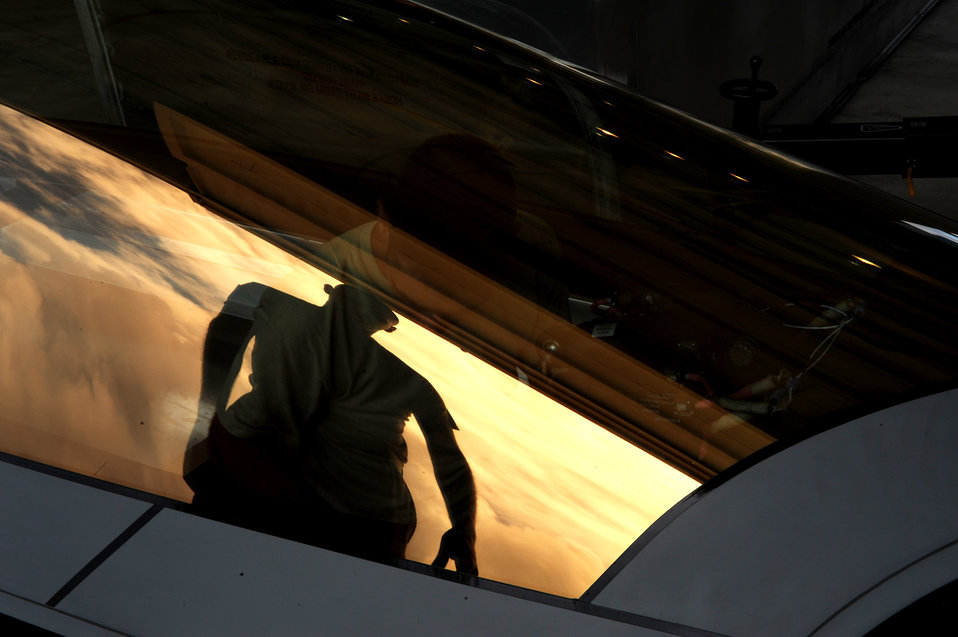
Egress technicians keep raptor pilots covered

Senior Airman Ryan Ott looks over an F-22 Raptor canopy before installation Feb. 18 at Andersen Air Force Base, Guam. The Raptors are on a deployment from Elmendorf AFB, Alaska, to Andersen. The base has received 12 of the $140 million dollar aircraft, and more than 250 Airmen as the Pacific's theater security package. As part of the continuing force posture adjustments to address worldwide requirements, the United States continues to deploy additional forces like the F-22 throughout the Western Pacific. This is the latest example of the flexibility U.S. forces have to meet their ongoing commitments and security obligations throughout the Pacific region. Airman Ott is an egress technician deployed from Elmendorf AFB and assigned to 36th Expeditionary Maintenance Squadron.